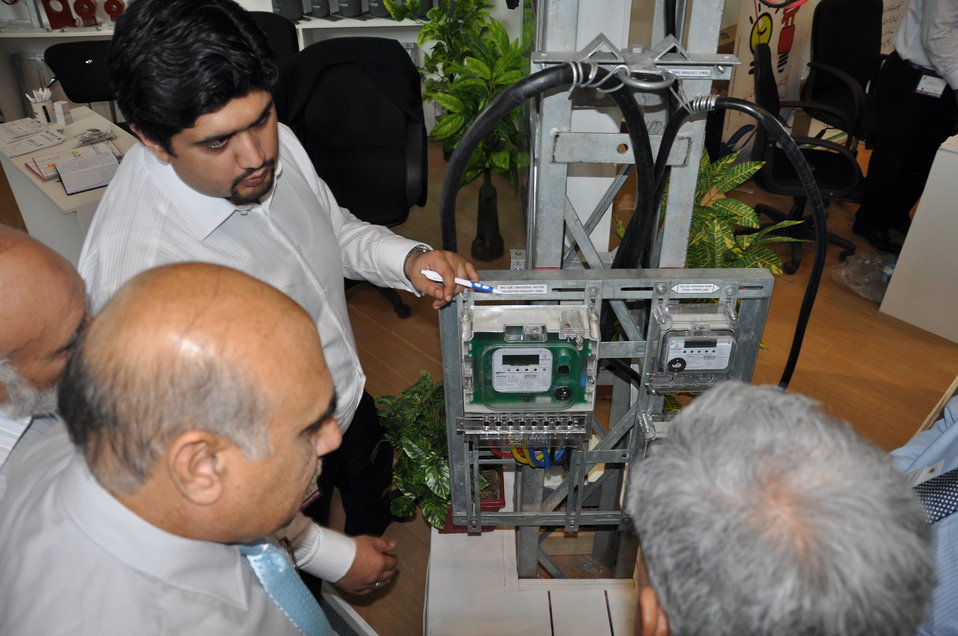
USAID participates in 11th International Pakistan Oil Gas Energy Exhibition

Visitors at the filed operations stall